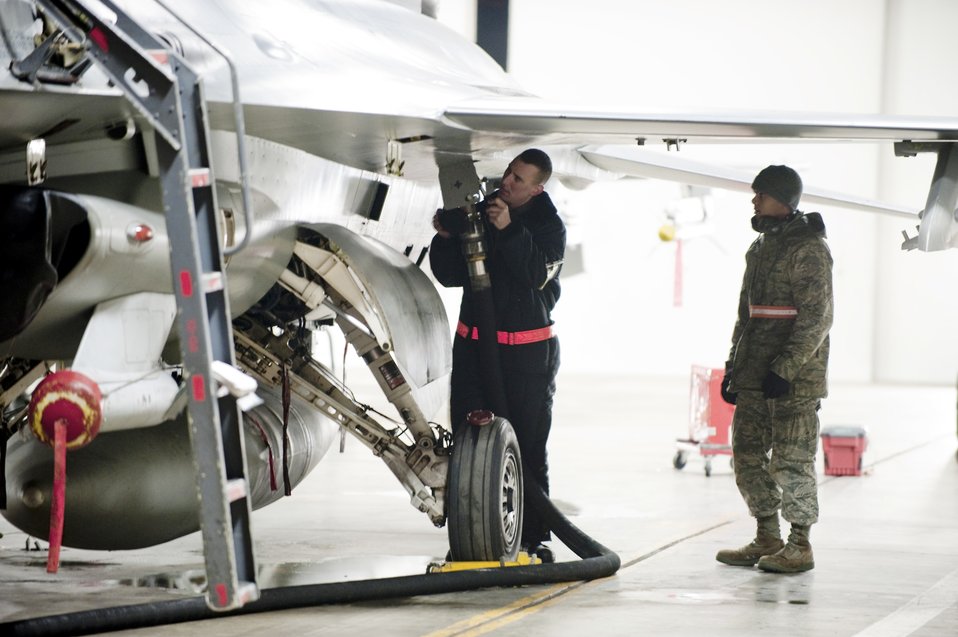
Fuels on a freezing day at Misawa

Airman 1st Class Dustin Smith (left), 13th Aircraft Maintenance Unit crew chief, attaches a fuel hose to an F-16 Fighting Falcon with Airman 1st Class Anthony Davis, 35th Logistics Readiness Squadron refueling unit operator, inside a hardened aircraft shelter Jan. 19, 2010, at Misawa Air Base, Japan. The 35th LRS fuels management flight distributes an average of 43,000 gallons of JP-8 jet fuel every 24 hours.